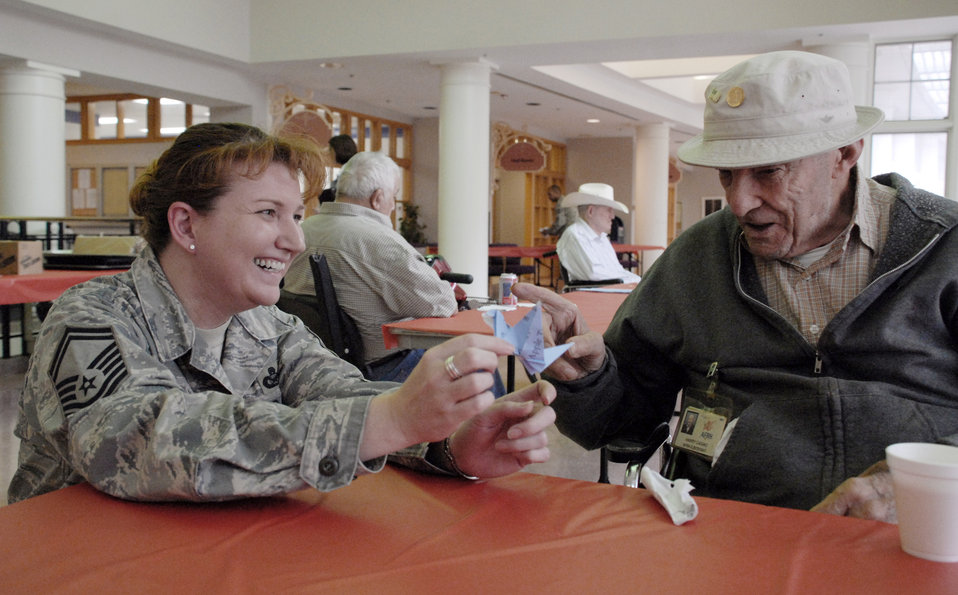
Joint Enlisted Council lift spirits at veterans home

Senior Master Sgt. Cheryl Toner shares a moment with retired Navy Petty Officer Harry Casino about his origami bird Oct.16, 2009, during a visit to the U.S. Soldier's and Airmen's Home in Washington, D.C. Sergeant Toner made the visit with the National Capital Region Joint Enlisted Council.